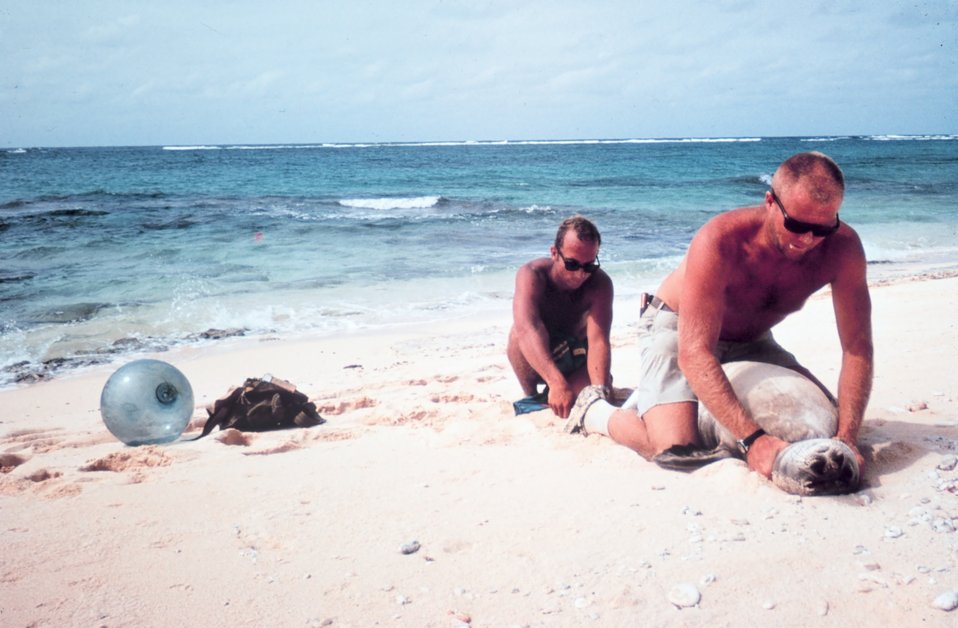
Hawaiian monk seal - Monachus schauinslandi. Tagging operations conducted under the auspices of the Bureau of Commercial Fisheries. Techniques were being developed at this time as this was only the second time that any Hawaiian Monk seals were tagged. Other than for needs of scientific studies, human interaction with protected species should be minimized.